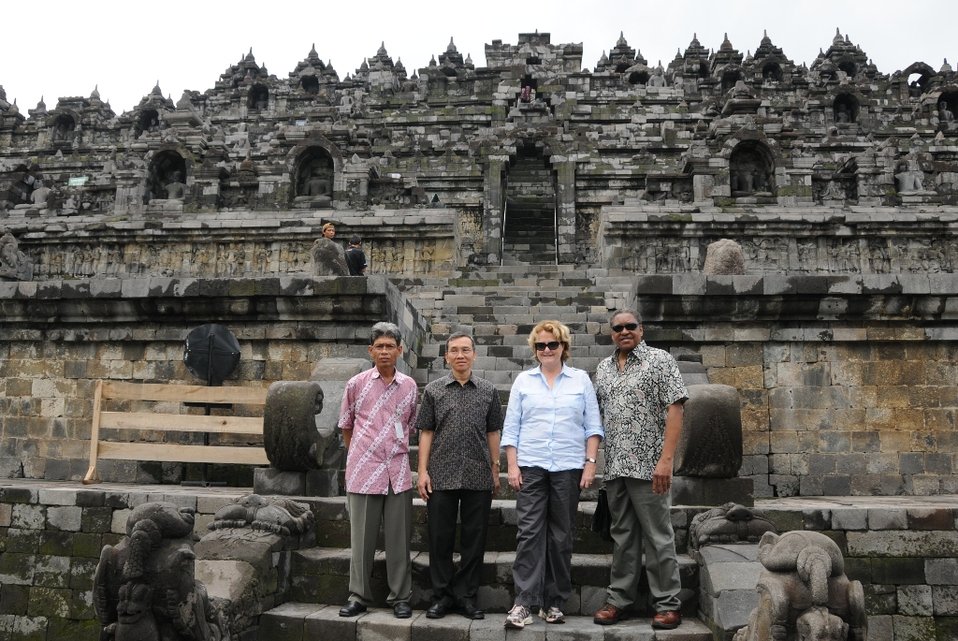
Under Secretary McHale Poses for a Photo at the Footsteps of the Borobudur Temple

U.S. Undersecretary of State for Public Diplomacy and Public Affairs Judith A. McHale speaks with the Head of Administration and Finance of the Borobudur Cultural Park, Hendro Hastjarjo, and U.S. Embassy in Jakarta’s Public Affairs Officer, Don Q. Washington, during a December 4, 2010, visit to observe the cleaning process of the footsteps of the Borobudur Temple after it was covered in ash due to the recent Mt. Merapi eruption.